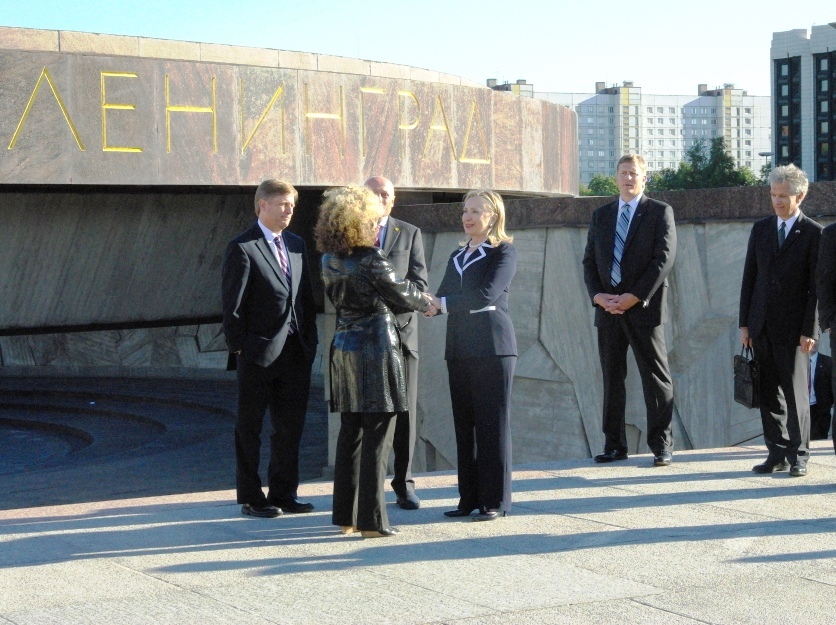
Secretary Clinton Departs the Monument

U.S. Secretary of State Hillary Rodham Clinton, flanked by U.S. Ambassador to Russia Michael McFaul on the left and U.S. Consul General in St. Petersburg Bruce Turner at the far right, departs the Monument to the Heroic Defenders of Leningrad on Victory Square in St. Petersburg, Russia, on June 28, 2012.